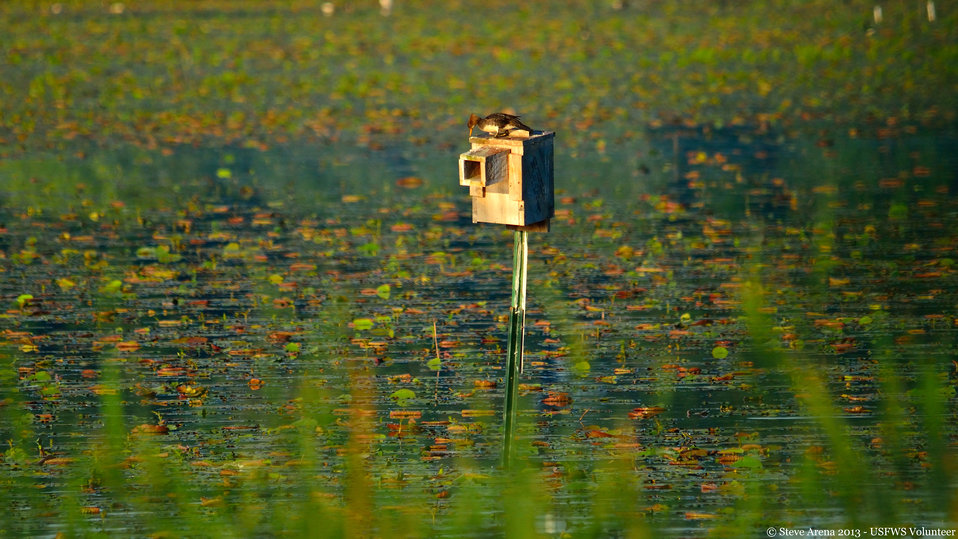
Hooded Merganser (Lophodytes cucullatus) - hen at nest box

Hooded Merganser, Great Meadows National Wildlife Refuge, Concord, MA

Credit: Steve Arena/USFWS

09 June 2013